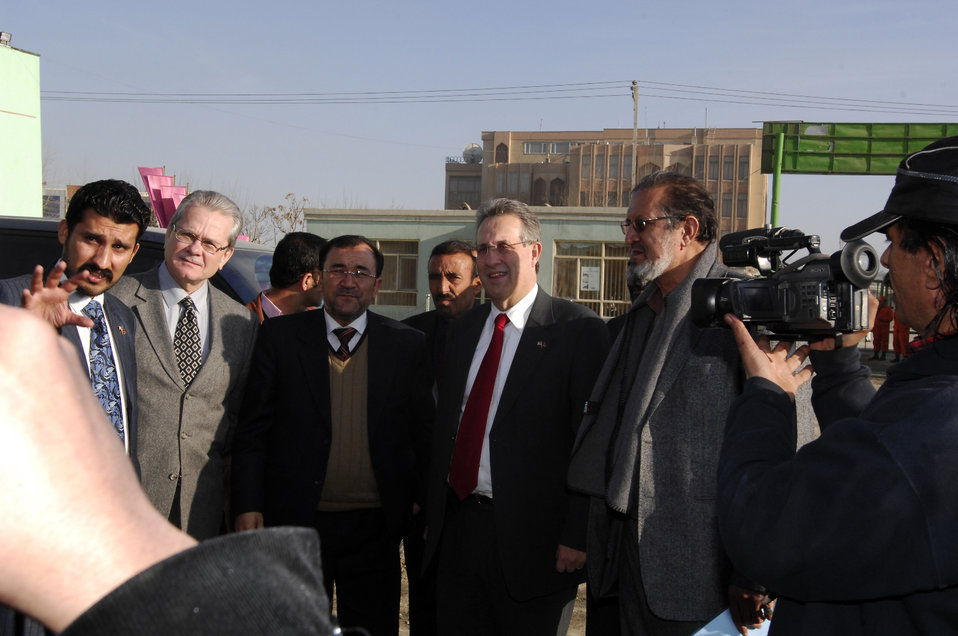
Care77